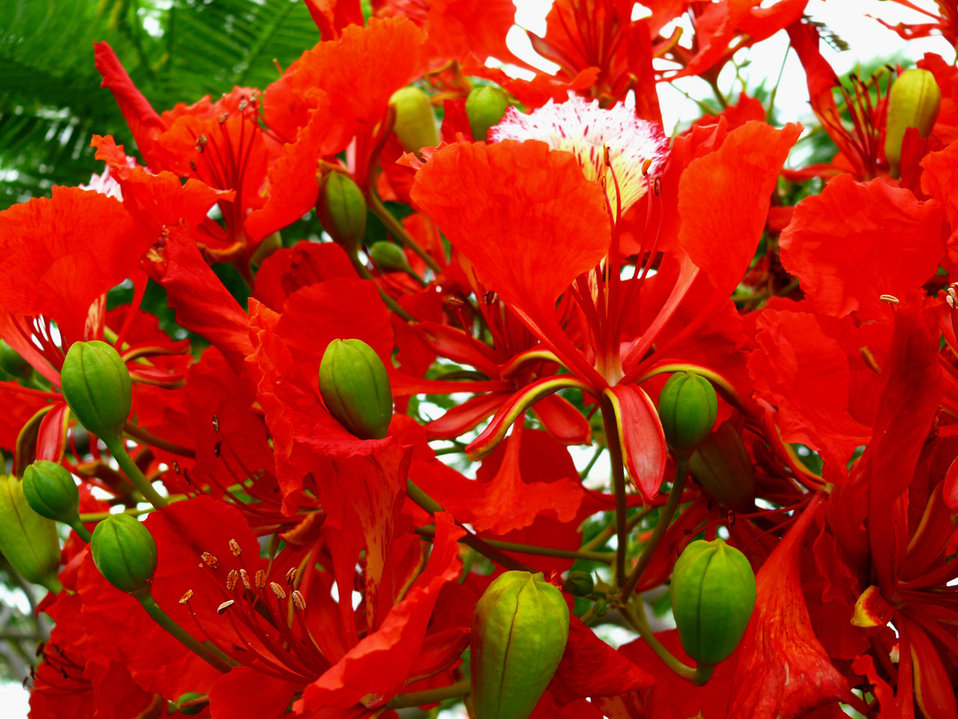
Flowers

Red flowers.